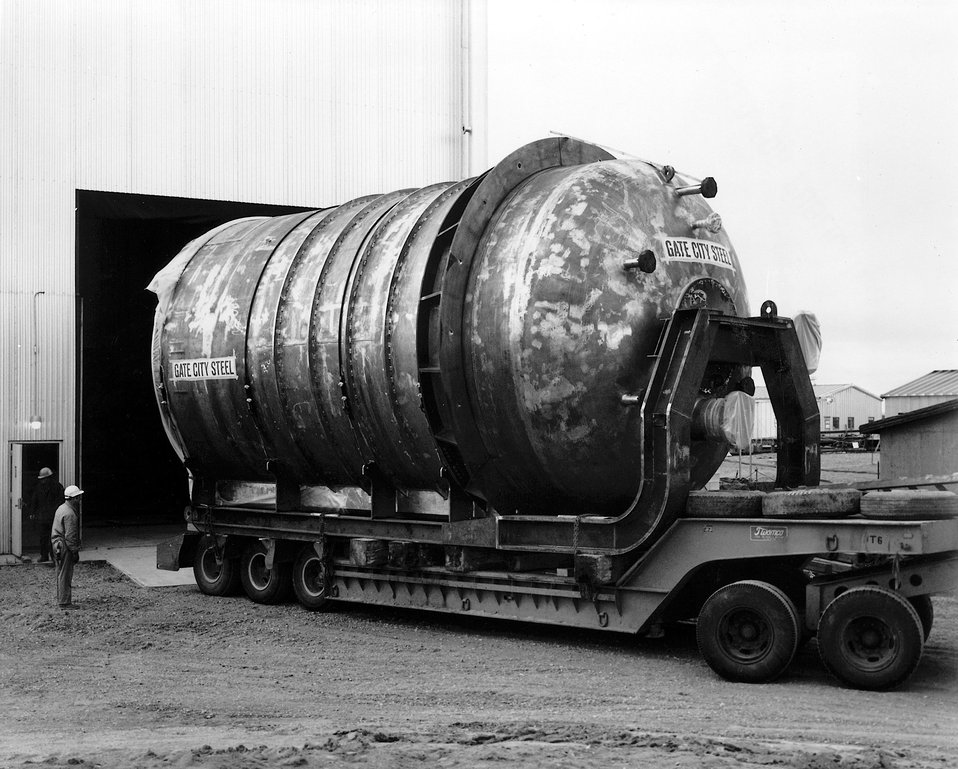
National Reactor Testing Station, Idaho... A 50-ton stainless steel reactor vessel arrives for installation in the Power Burst Facility (PBF) at the Atomic Energy Commission's National Reactor Testing Station west of Idaho Falls. Circa 1970.